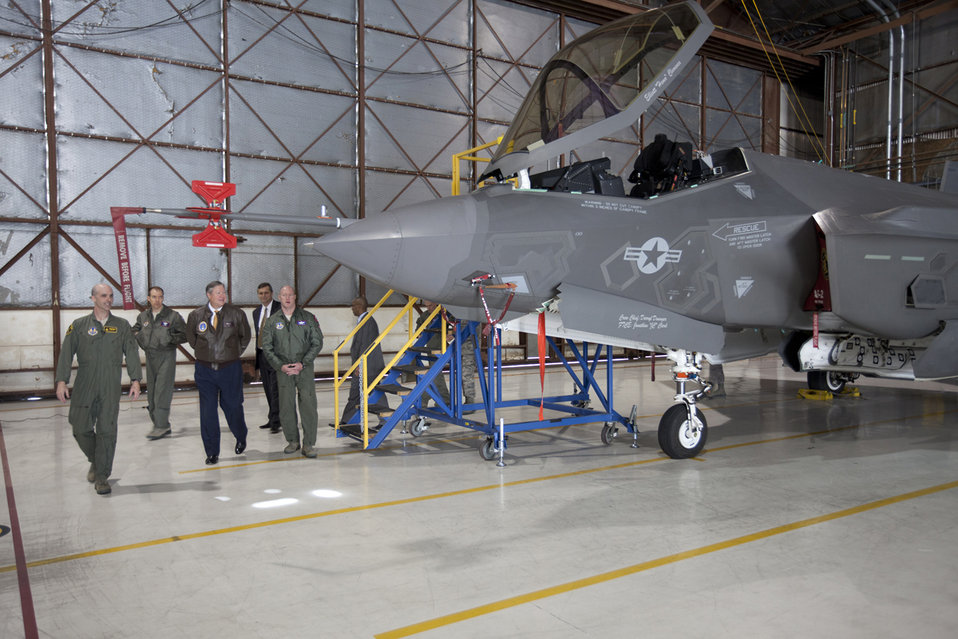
SecAF visits F-35 program at Edwards AFB

Lt. Col. George Schwartz, Commander of the 461st Flight Test Squadron at Edwards AFB, gives a tour of AF-2 to the Honorable Secretary of the Air Force Michael B. Donley (brown coat).